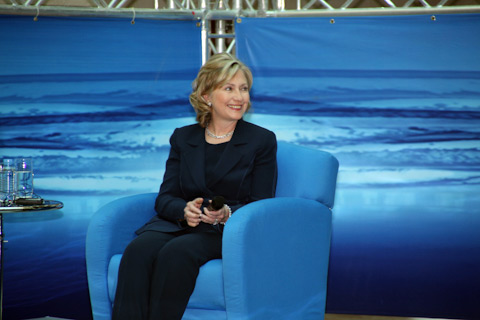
Secretary Clinton Travels to Qatar and Saudi Arabia

U.S. Secretary of State Hillary Rodham Clinton at the Townterview, listening to a question from a student in the audience in Doha, Qatar February 15, 2010.